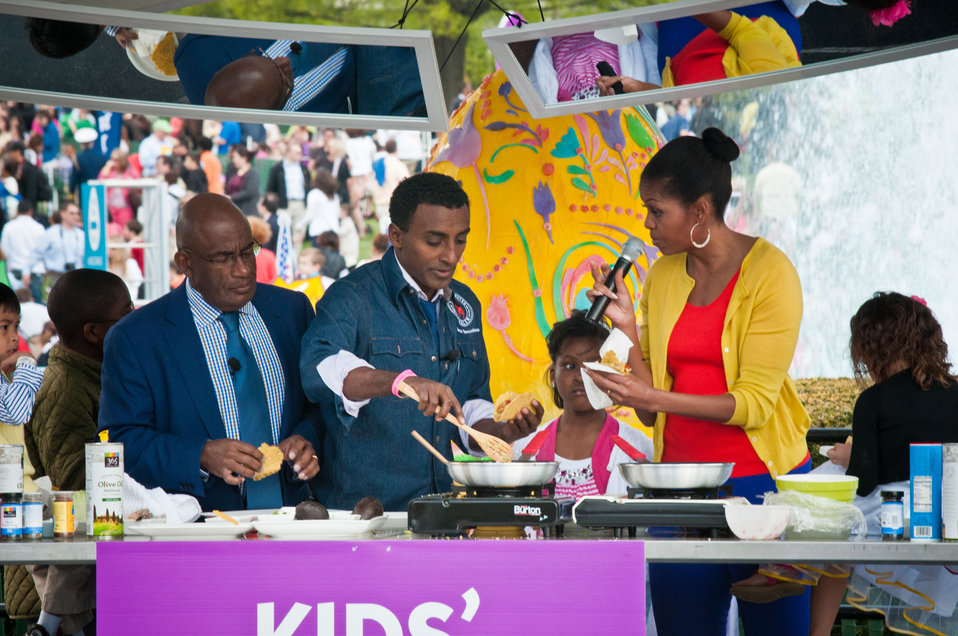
Weather and feature anchor NBC TODAY Show Al Roker (left), Chef Marcus Samuelsson (center) and First Lady Michelle Obama (right), prepare Shrimp Salad and Vegetable Tacos at the “Kids’ Kitchen” activity center led by the White House chefs and celebrity guest chefs at the White House Easter Egg Roll Monday, April 9, 2012 in Washington, D.C. This years Easter Egg Roll is the 134th year of the largest annual public event at the White House. This year’s theme is “Let’s Go, Let’s Play, Let’s Move!” The theme is the emphasis of First Lady Michelle Obama’s Let’s Move initiative promoting health and wellness and encouraging children to lead healthy and active lives to solve the problem of childhood obesity. The activity center was built around the White House Kitchen Garden.